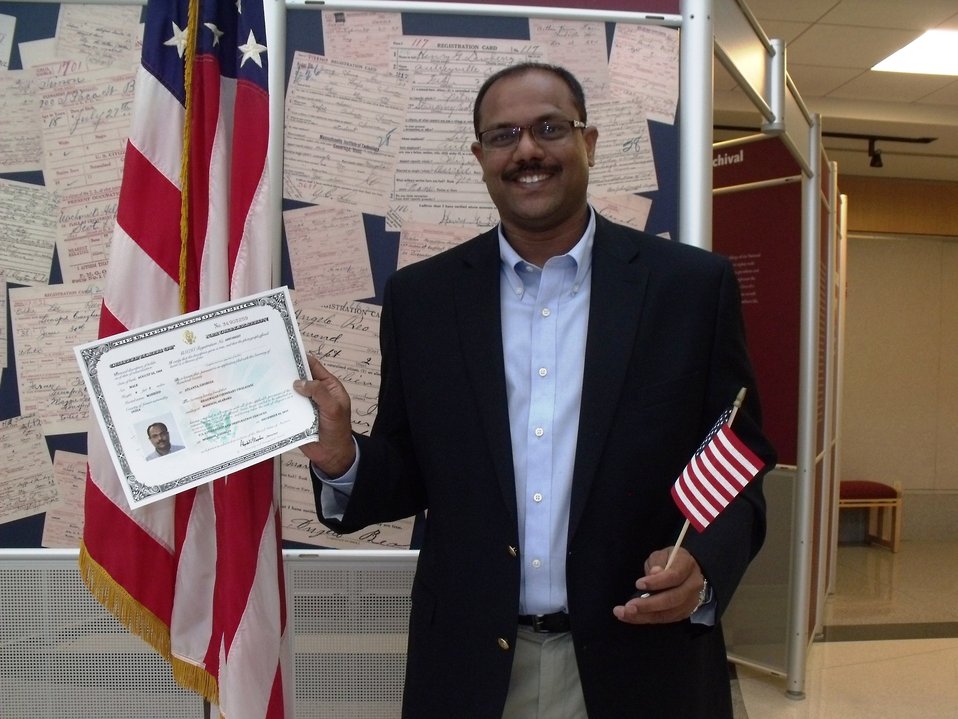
New Citizens